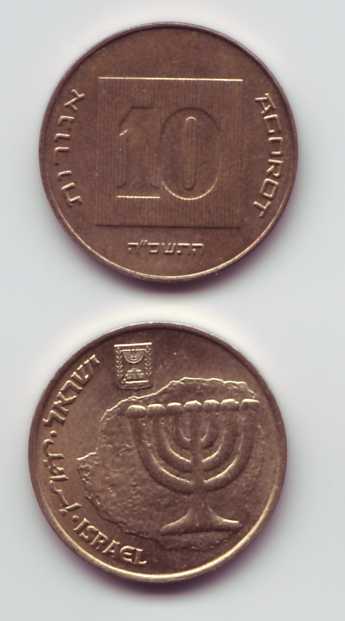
10 Agorot coin from התשס'ה